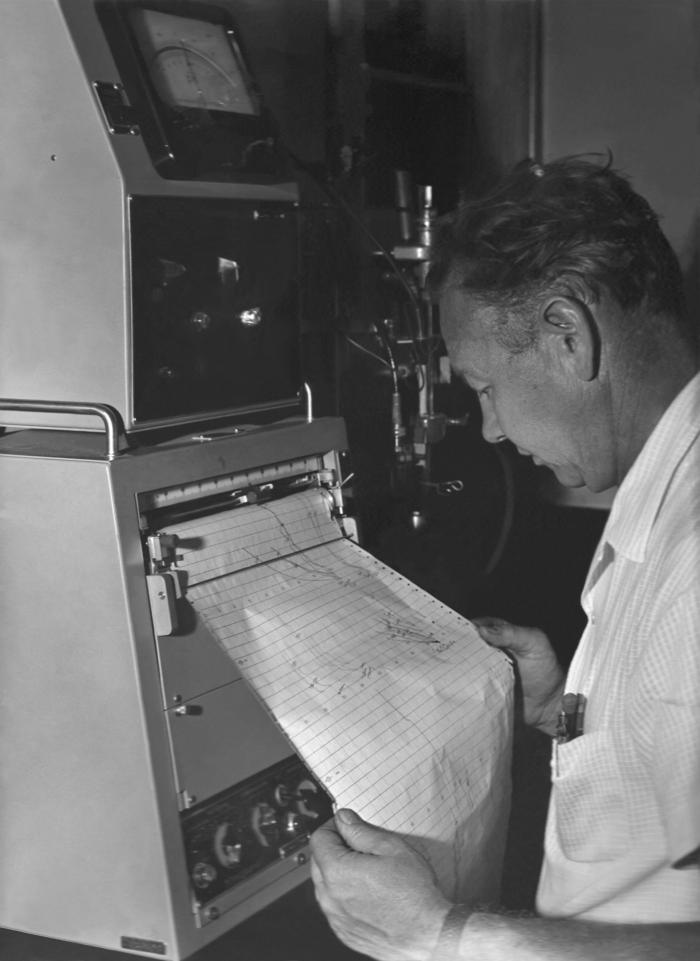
Photograhed sometime in the 1960s, this historic image featured former Centers for Disease Control microbiologist, Dr. William Vernon Hartwell, as he was reading a print-out produced from an unidentified machine, which judging from the data, was measuring chemical samples for their content concentrations. Vern, as he liked to be called, was associated with early studies conducted in the area of Hepatitis-B virus (HBV) analyses, specializing in the realm of Australian antigen testing.